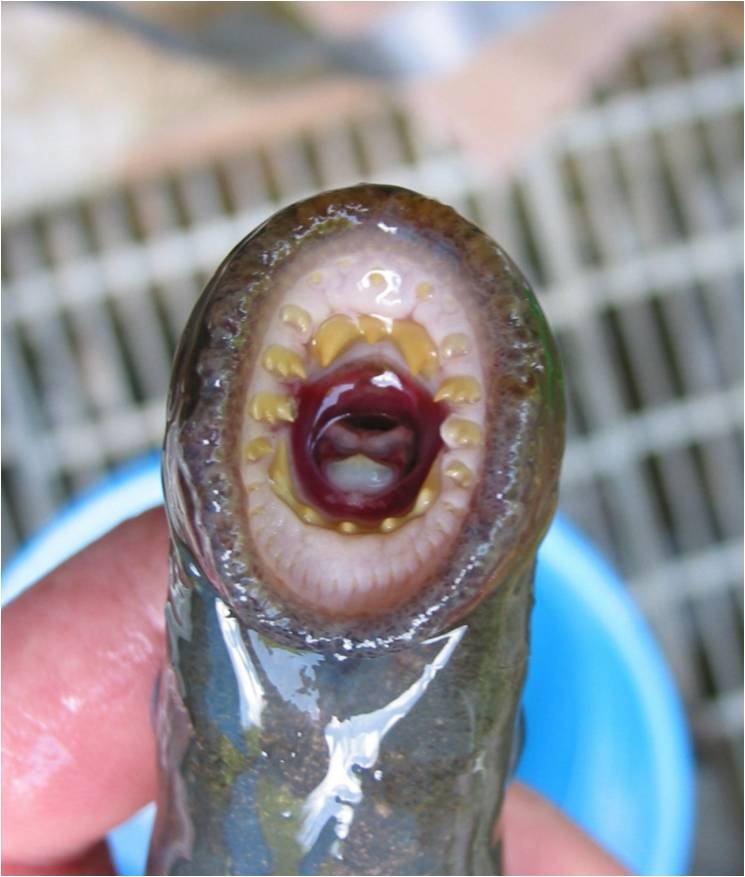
Lamprey mouth

Adult tooth pattern.